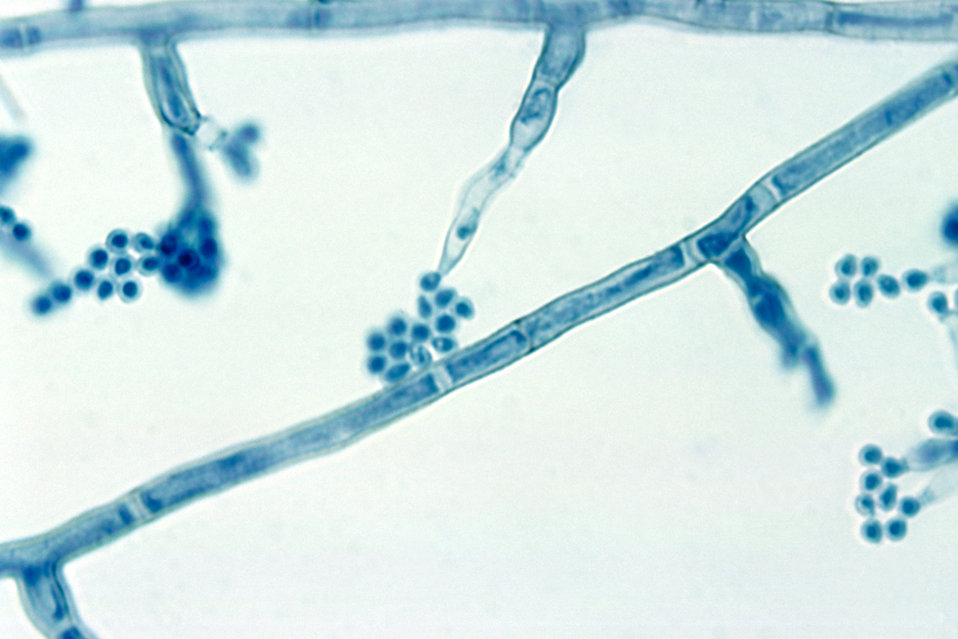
This photomicrograph shows phialides with terminal conidia of the Madurella mycetomatis fungus.